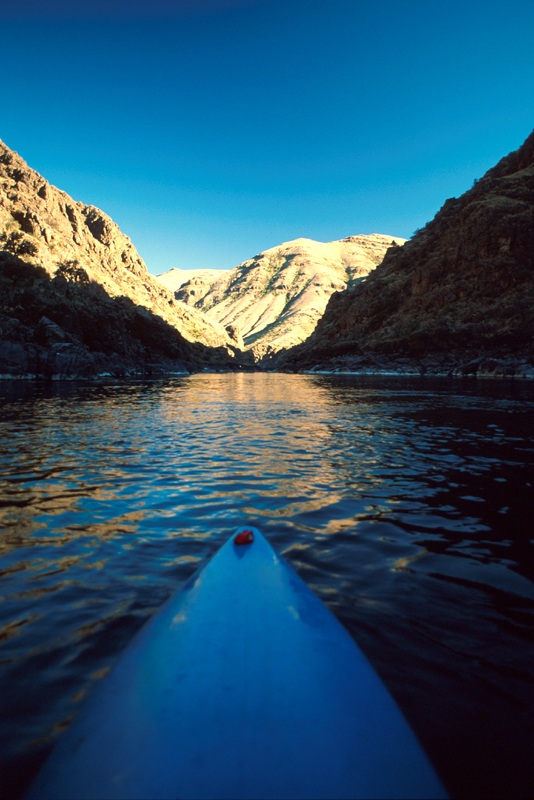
Kayak Cottonwood Field Office UCSC Upper Columbia Salmon Clearwater District